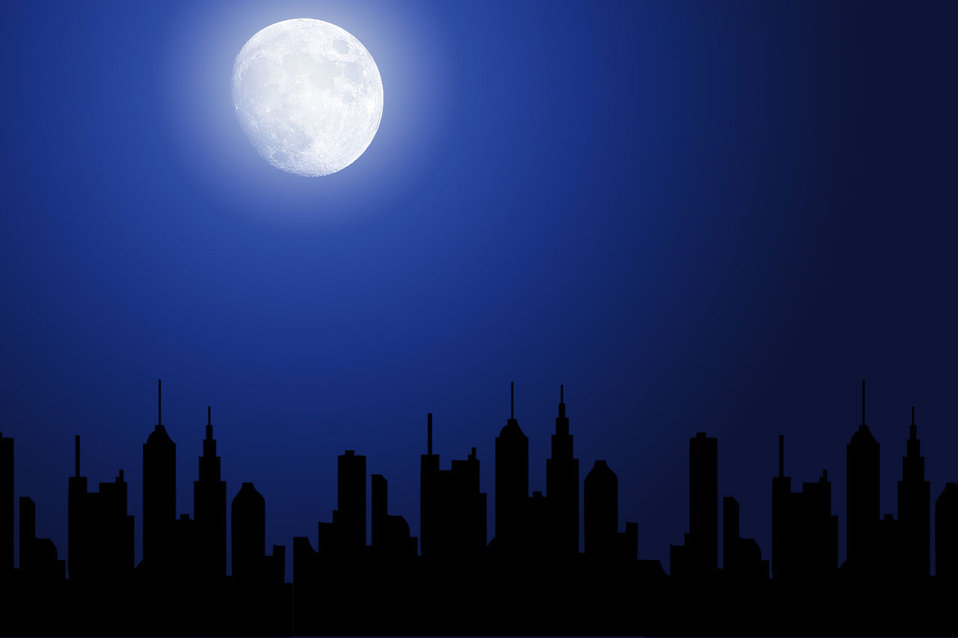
City at night with moon.